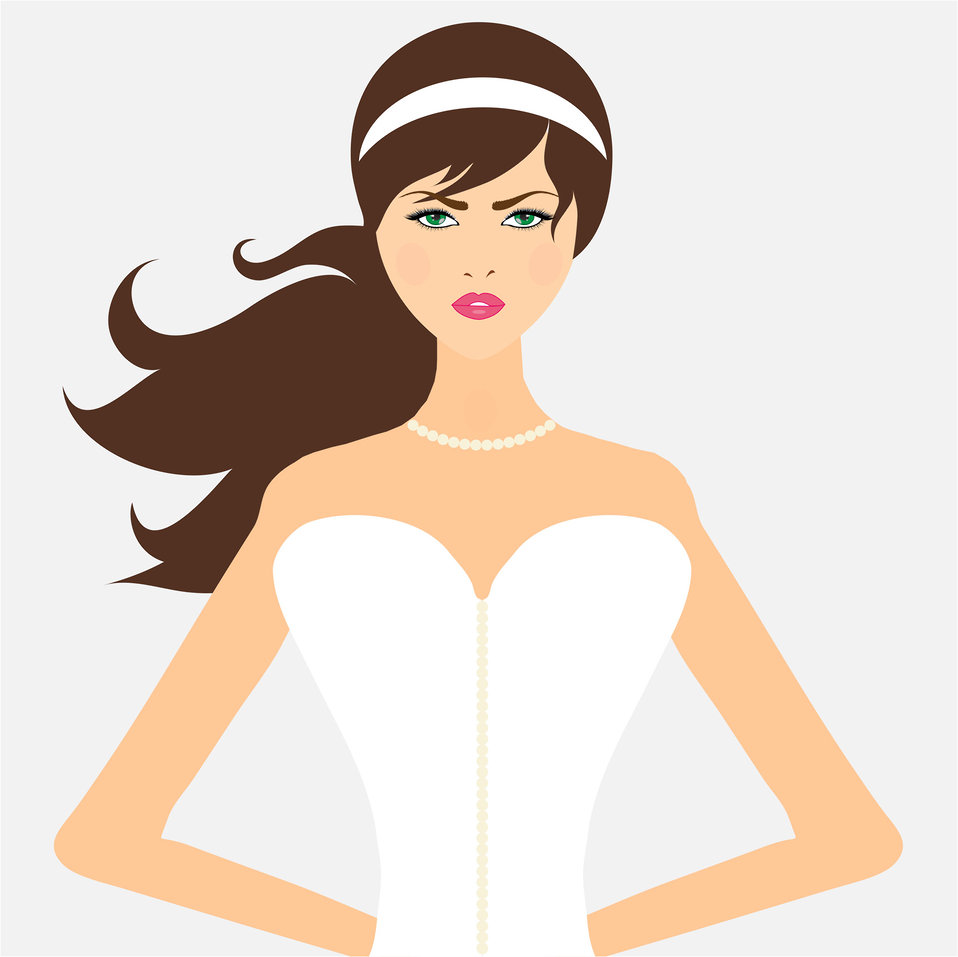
Beautiful bride illustration.